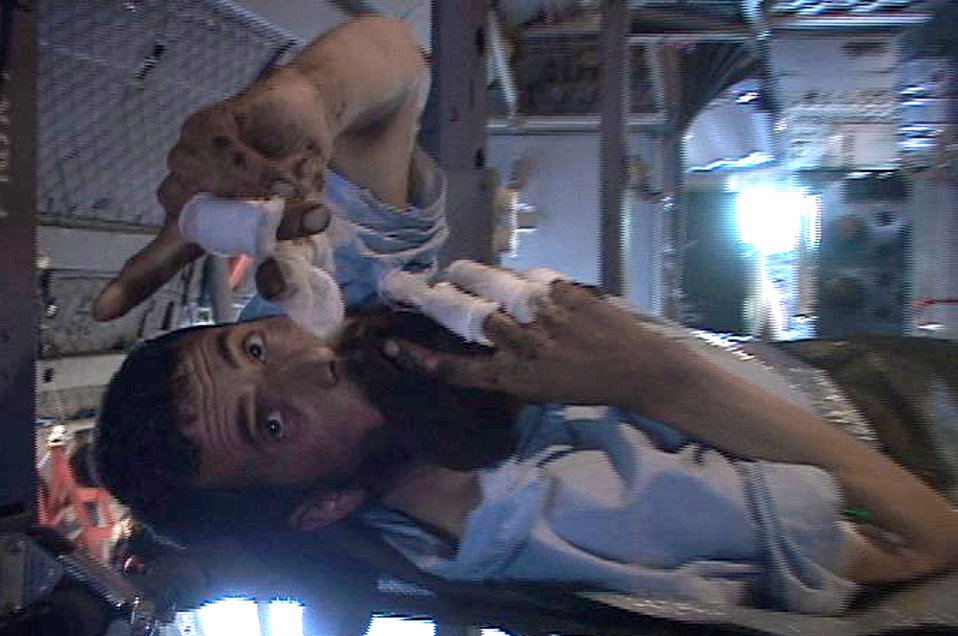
Saving lives

An Afghanistan National Security Forces soldier waves for assistance while on a C-27 Spartan during a medical evacuation flight Jan. 26, 2011, bound for Kabul from Kandahar Airfield, Afghanistan.